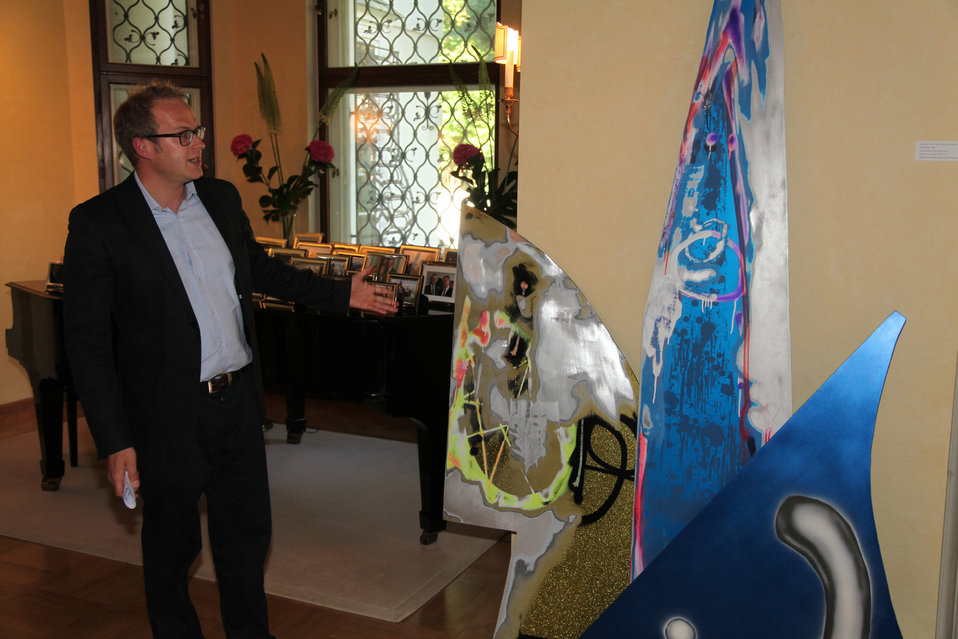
The Curator of an Art Exhibit Explains a Piece

Curator Johannes Fricke Waldthausen explains artwork featured an art exhibit sponsored in coordination with the American Academy and German Academic Exchange Service (DAAD) and features German and American artists who have lived and worked in each other’s country in Berlin, Germany, on June 20, 2011.